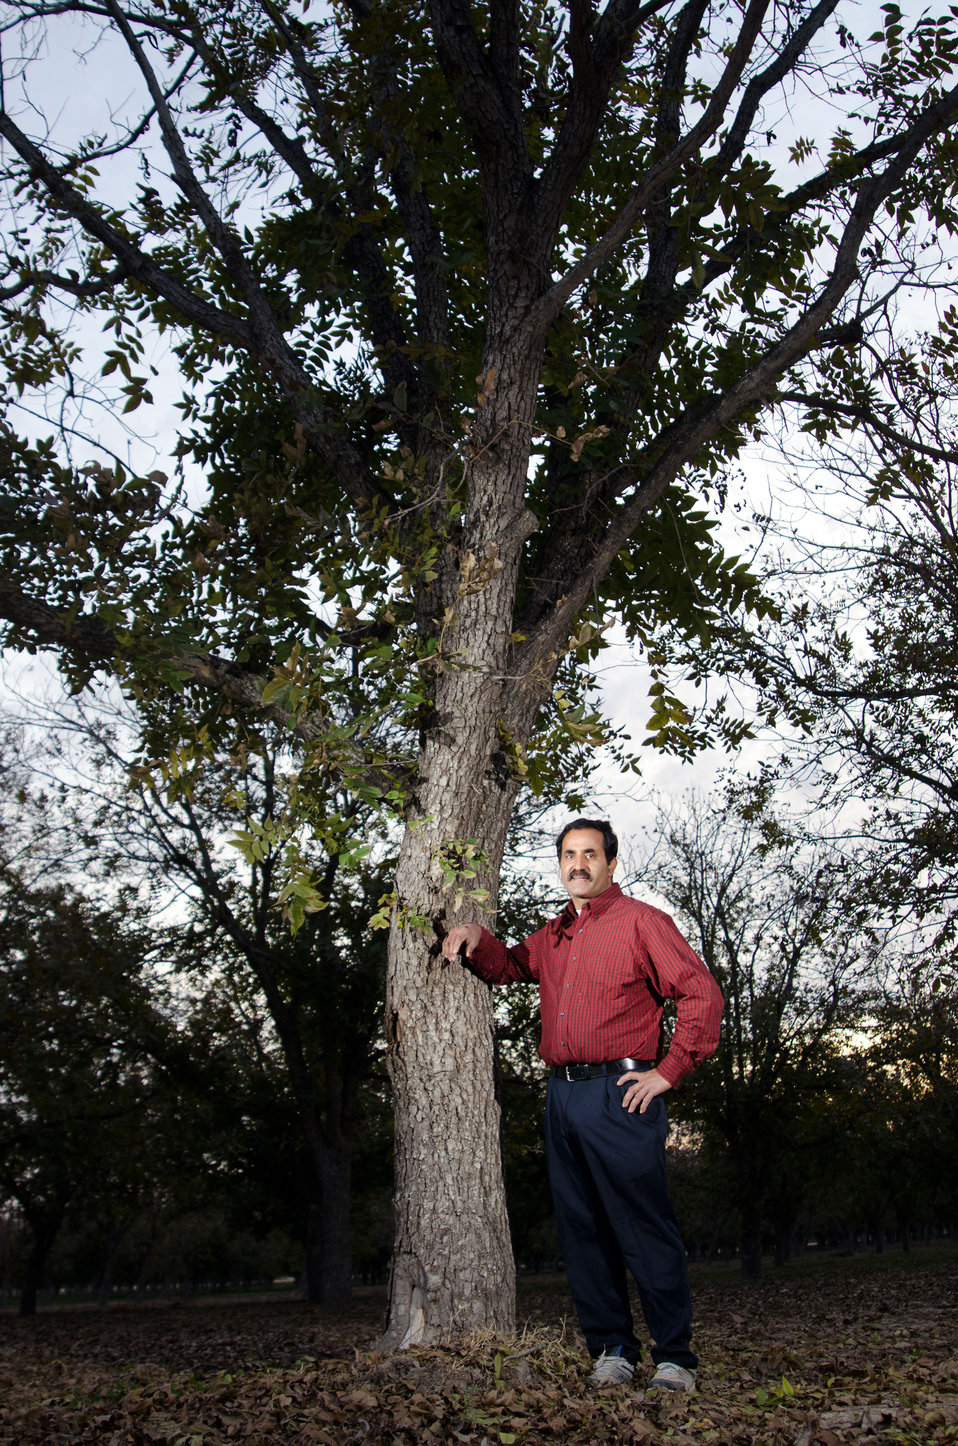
Arrowhead Farms of Crystal City, TX, on Friday, December 9, 2011, has been owned by Mr. Akram Mohammad, a pecan farmer since 2005. The 719 acre farm with 10,000 trees, features some orchards with underground micro irrigation system that feeds water to the roots of 4,380 pecan trees on 146 acres. Mr. Mohammad said, “USDA (U.S. Department of Agriculture) was essential to my business and trees surviving the recent exceptional drought. The trees were stress free thanks to underground micro-irrigation. This is essential to the future growth of Texas agriculture and good for America.” U.S. Department of Agriculture’s (USDA) Environmental Quality Initiative Program (EQIP) awarded Mr. Mohammad a $130,000 grant in 2008. He provided $26,000 for the balance of the $156,000 total cost to install a 146-acre underground micro-irrigation for 4,380 trees.